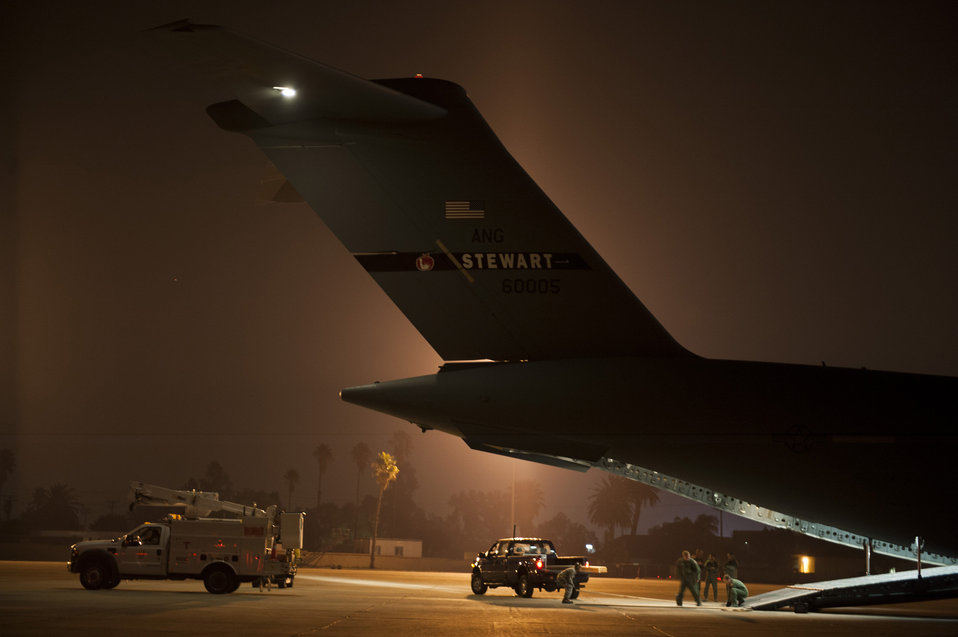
Hurricane Sandy relief

U.S. Air Force loadmasters place planks down to help load a utility truck bound for New York to aid in the Hurricane Sandy relief effort at March Air Reserve Base, Calif., Nov. 1, 2012. Air Mobility Command responded to a Federal Emergency Management Agency request to move 637 short tons of supplies and equipment from Southern California to New York on 12 C-17 Globemaster III and five C-5 Galaxy aircraft in the wake of Hurricane Sandy.